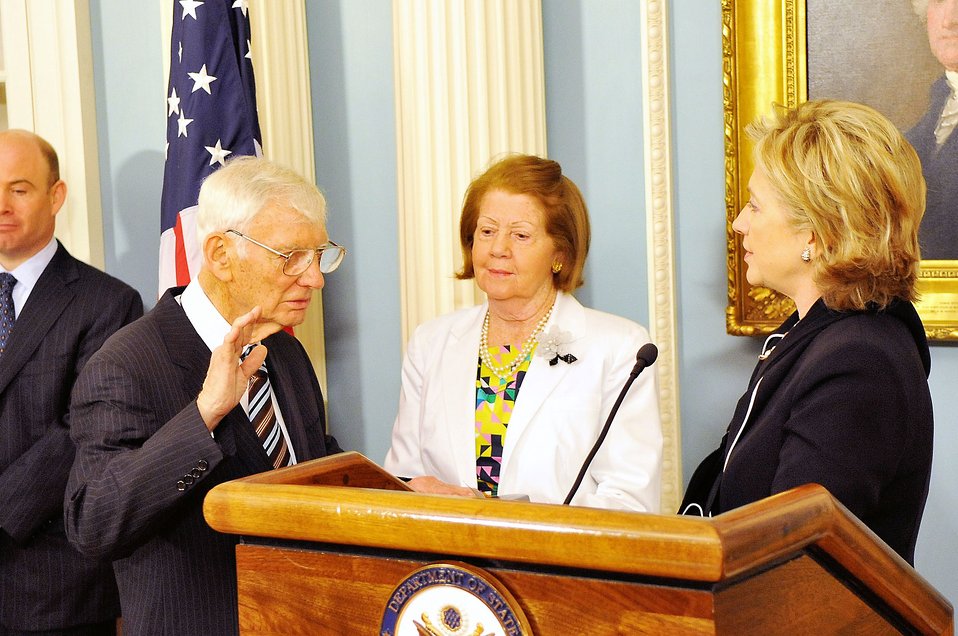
U.S. Ambassador to Ireland Swearing-In Ceremony

U.S. Secretary of State Hillary Rodham Clinton officiates the swearing-in ceremony for The Honorable Daniel Rooney, U.S. Ambassador to Ireland, at the U.S. Department of State in Washington, DC July 1, 2009.